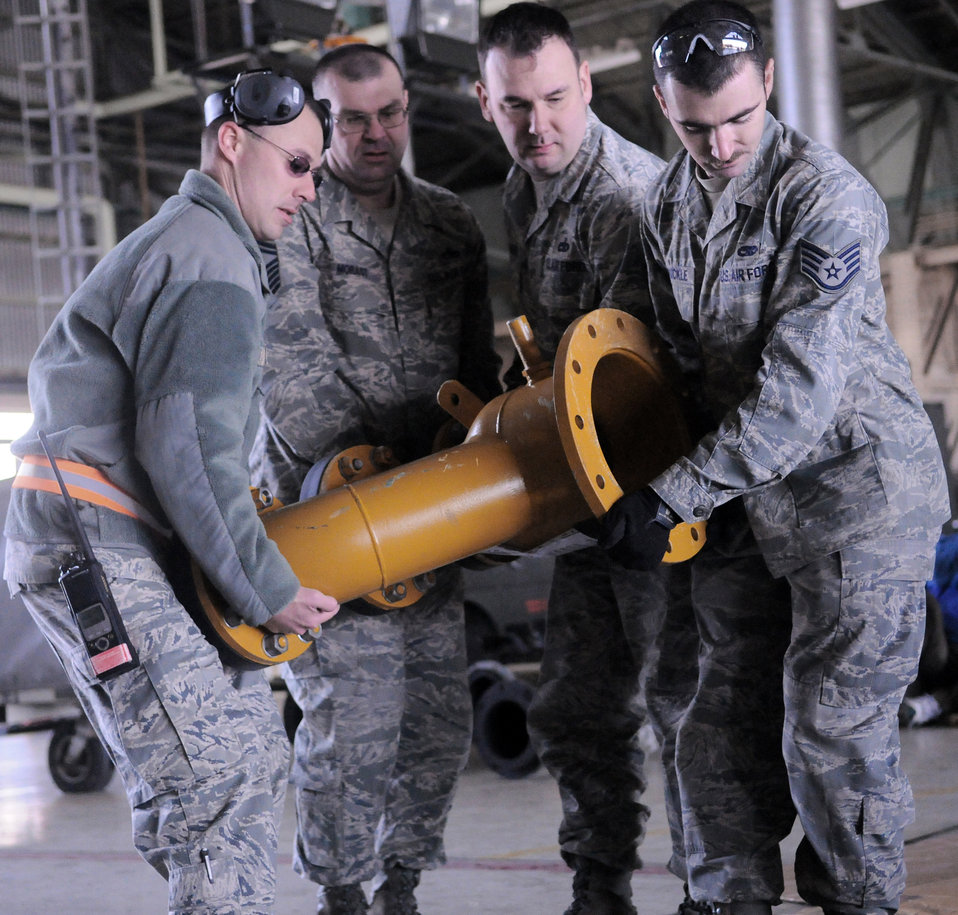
Yokota Airmen help cool power plant

Airmen from the 374th Maintenance Squadron carry a custom made reduction flange March 26, 2011, at Yokota Air Base, Japan. Two teams of four Airmen on 12-hour shifts designed and created the necessary adapters, pressure valves and other pieces so Japanese crews can use a water pump -- donated by the U.S. government -- to augment the Fukushima nuclear plant's cooling system. The pump will be used to transport fresh water into the plant instead of ocean water, which leaves corroding salt residue when it evaporates.